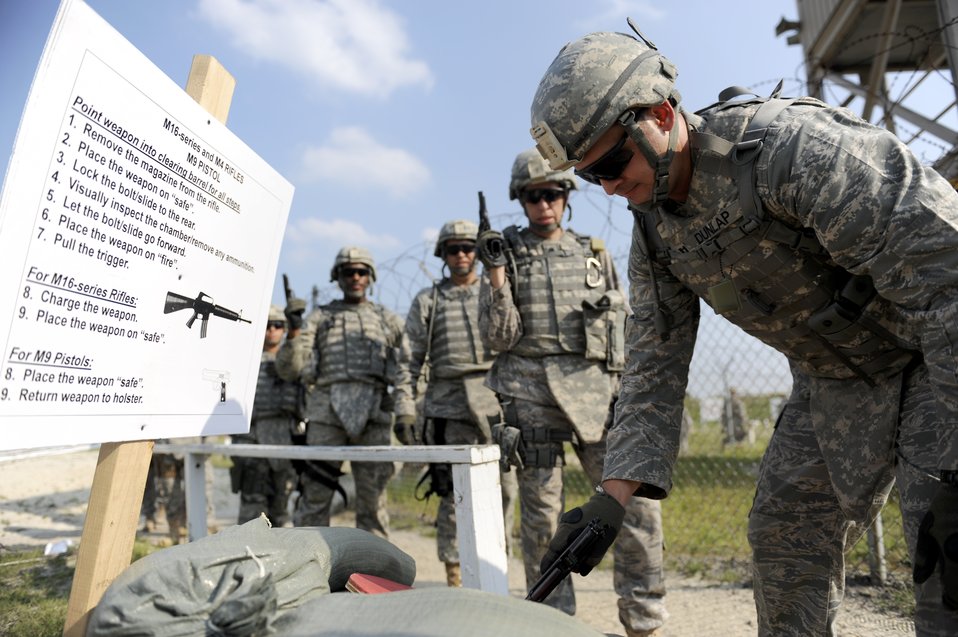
Airmen prepare for deployment

Capt. Scott Dunlap clears his weapon during 9mm familiarization training Aug. 10 at Fort Dix, N.J. Combat Skills Training prepares Airmen for Joint Expeditionary Tasking combat roles augmenting the U.S. Army in support of operations Enduring and Iraqi Freedom. The captain is the officer in charge of plans and operations assigned to the 3rd Combat Communications Support Squadron at Tinker Air Force Base, Okla.